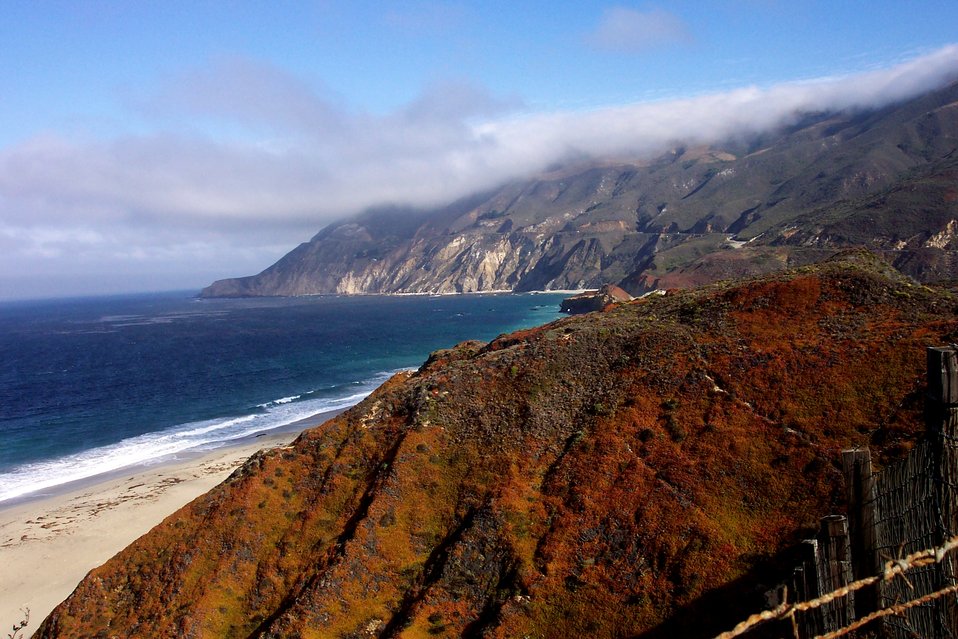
Looking north along the Big Sur coastline with fog-shrouded peaks.